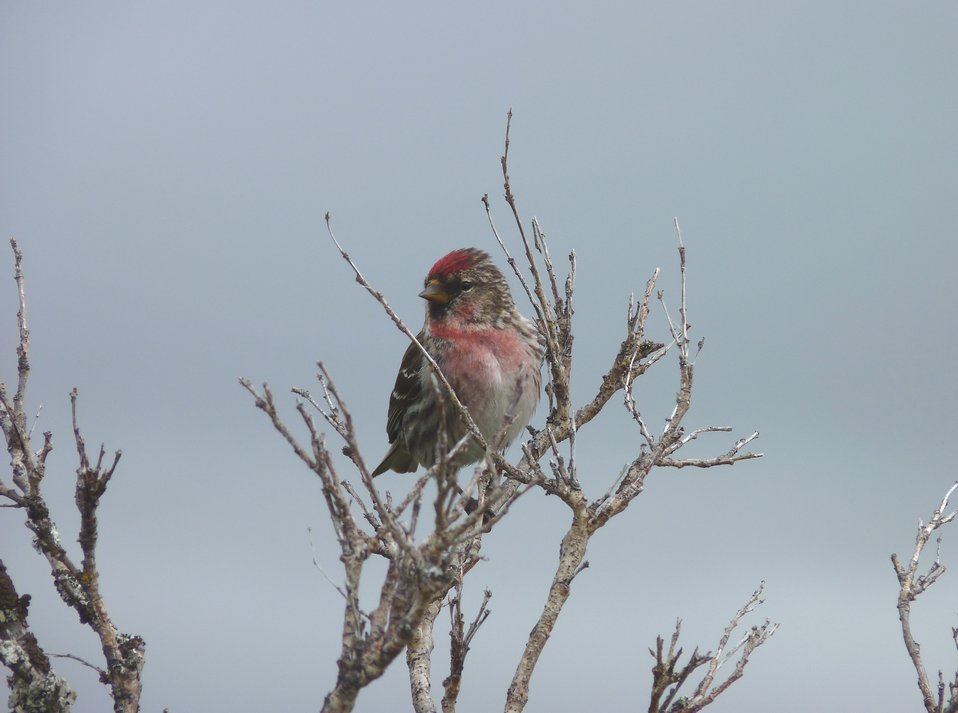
Common redpoll

Andreafsky wilderness, Yukon Delta National Wildlife Refuge